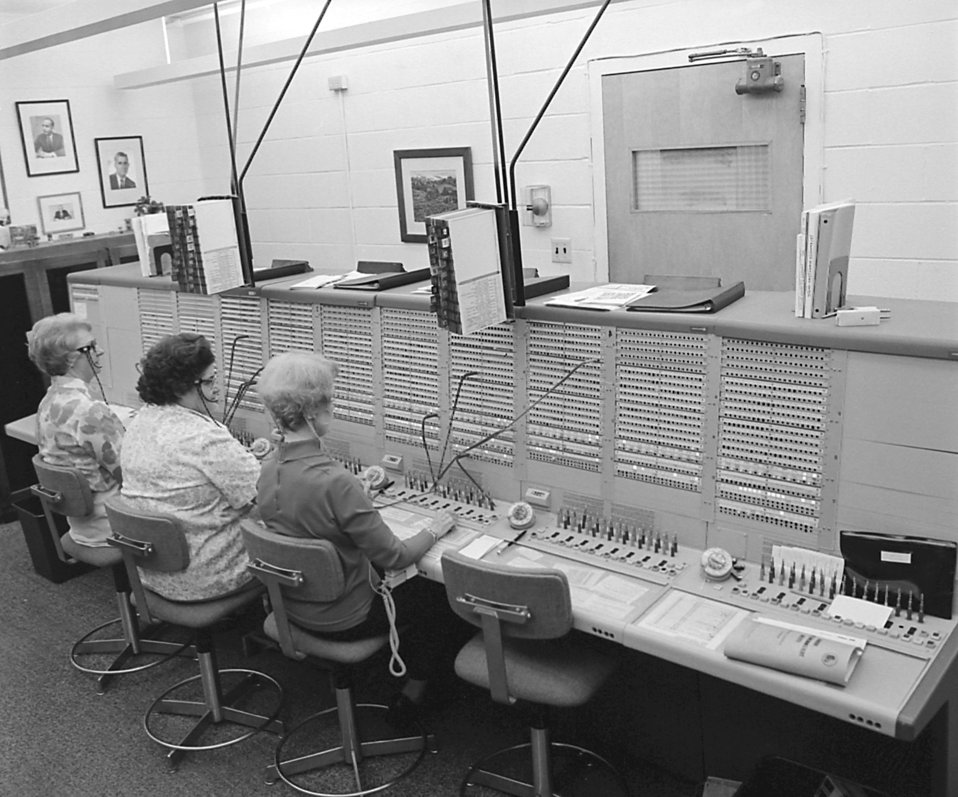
Photo of operators at CDC Switchboard.